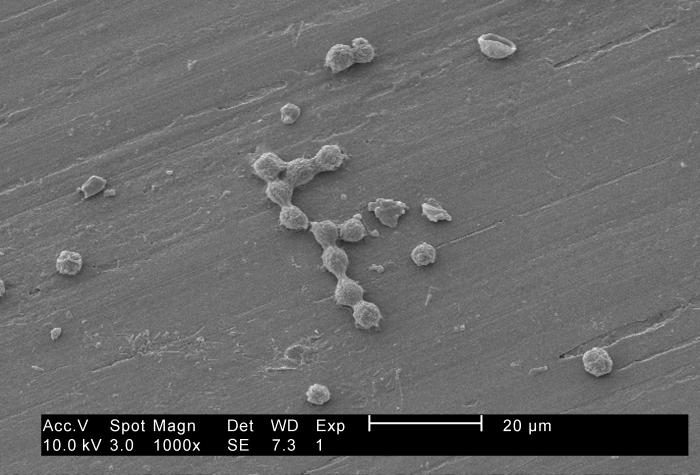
Under a moderately-high magnification of 1000X, this 2002 scanning electron micrograph (SEM) revealed some of the ultrastructural morphology exhibited by a number of Hartmannella vermiformis amoebae cysts.